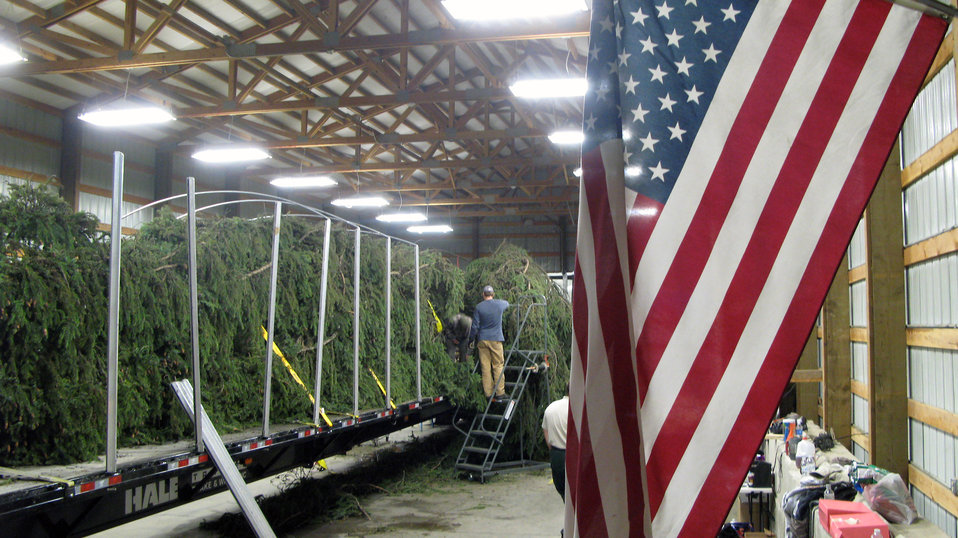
Colville National Forest personnel prepare the official 2013 Capitol Christmas Tree for transport on Nov. 3, 2013. The Capitol Christmas tree is an 88-foot tall Engelmann spruce that was harvested at Colville National Forest in Washington on Nov. 1, 2013.